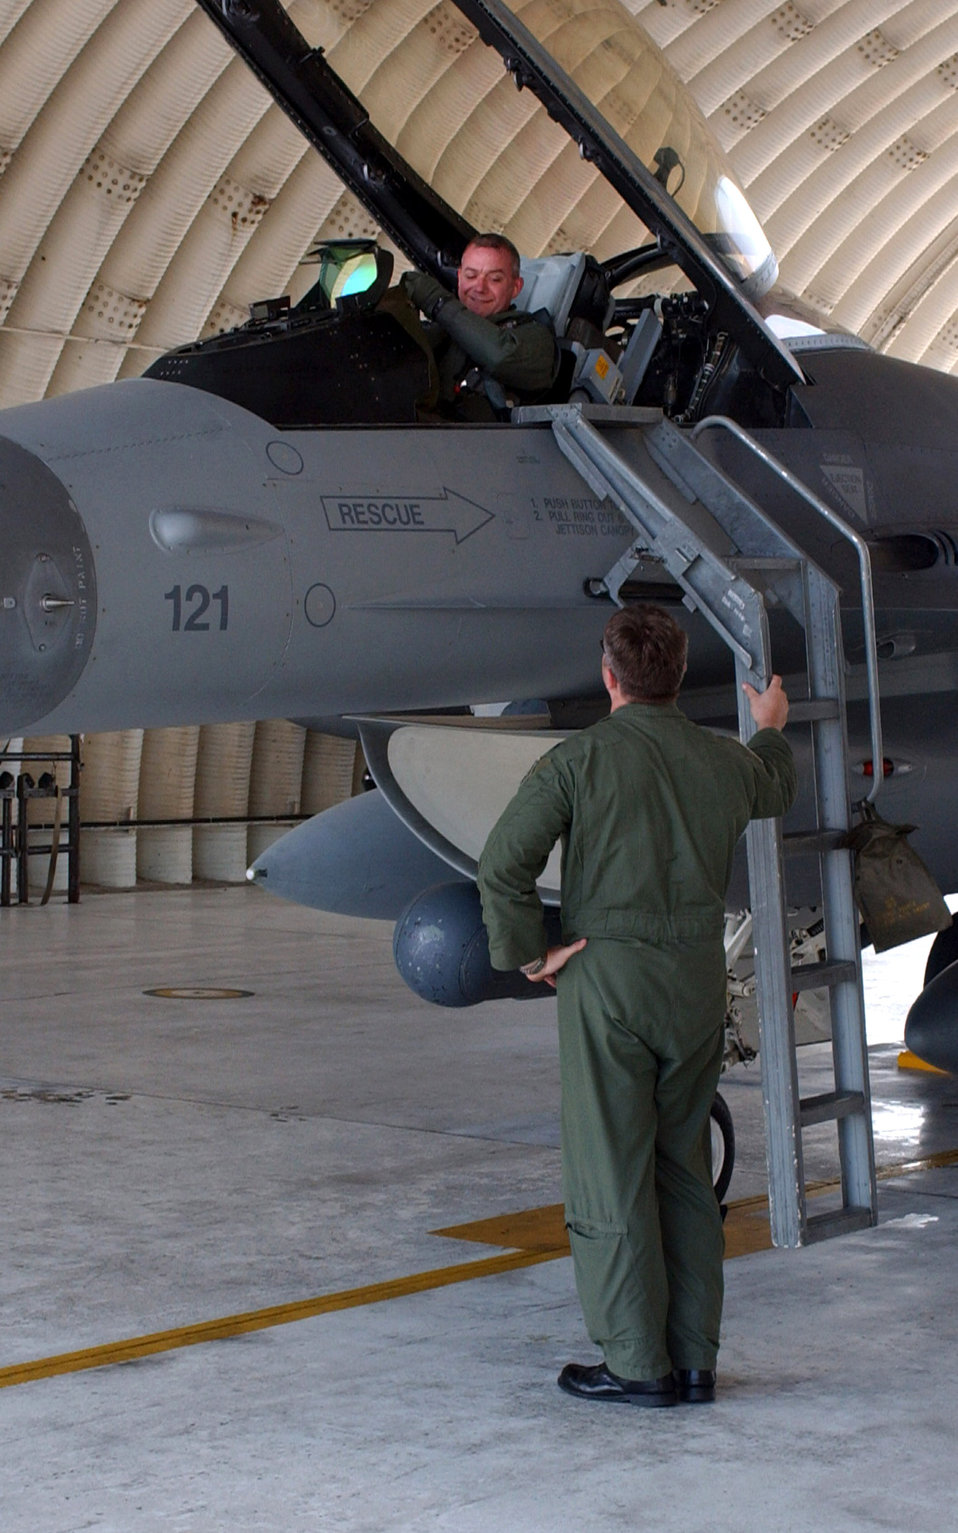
Kunsan receives upgraded fighters

Lt. Col. Shane Riza is greeted by Lt. Col. Thomas Klopotek at Kunsan Air Base, South Korea, Oct. 2 after flying a new Block 40 F-16 Fighting Falcon to Kunsan from Eielson Air Force Base, Alaska. The upgraded fighter was the first of several F-16s the 8th Fighter Wing was receiving as part of the Common Configuration Implementation Program. Colonel Klopotek is the 80th Fighter Squadron commander. Colonel Riza is the 80th FS director of operations.